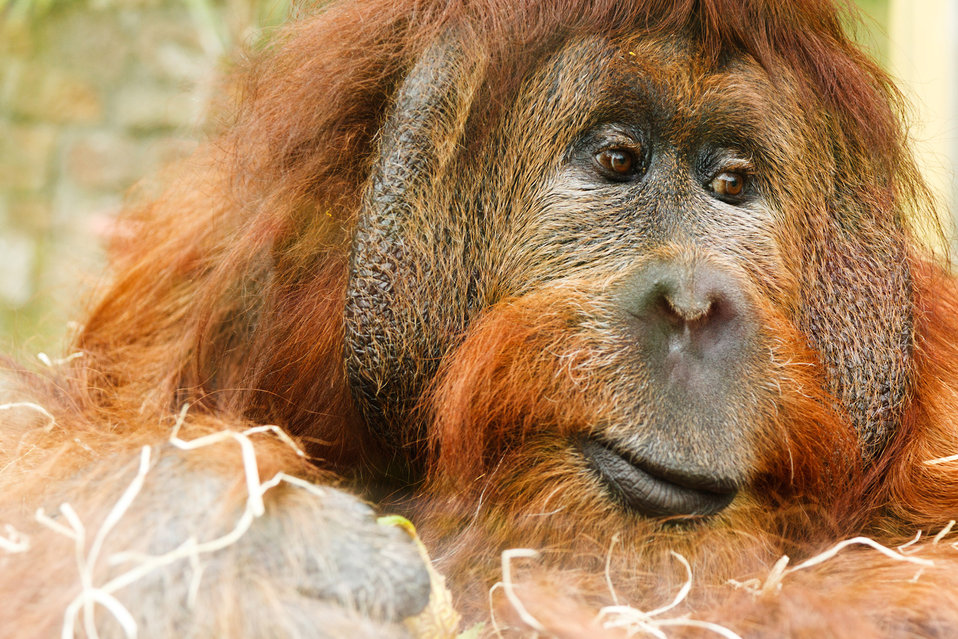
Orangutan

The adult male of the orangutan.